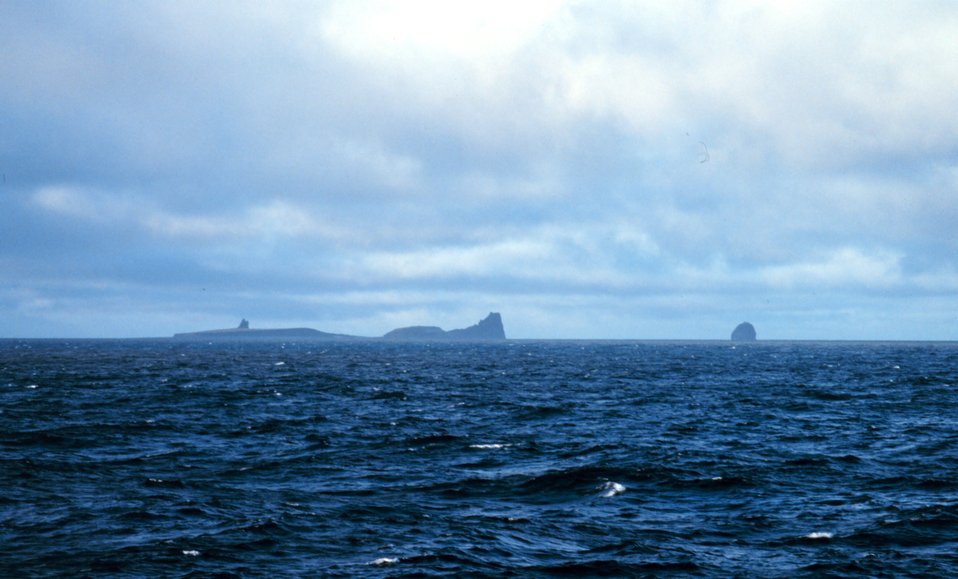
Bogoslof Island, a chronic piece of land that comes and goes with various eruptions. Presently above the water surface and a home for marine mammals and birds.